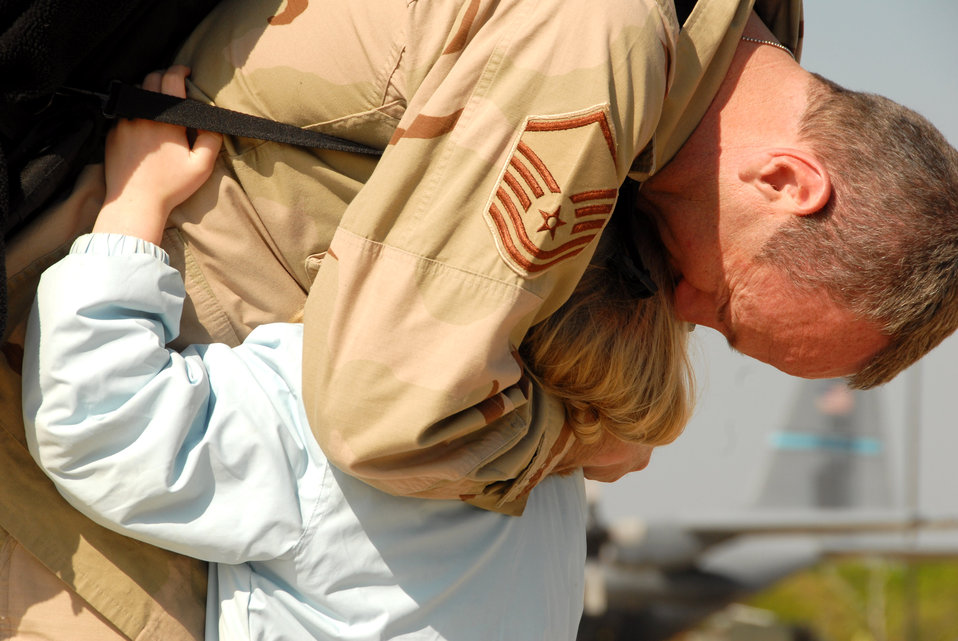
Nothing can be finer than to be in Carolina

Master Sgt. Mitchell Lefler hugs his daughter, Sarah, after arriving back home April 6 from supporting Operation Enduring Freedom to Charlotte, N.C. Sergeant Lefler is a C-130 Hercules maintenance technician assigned to the 145th Airlift Wing for the North Carolina Air National Guard, and is returning from a tour of duty in Afganistan.